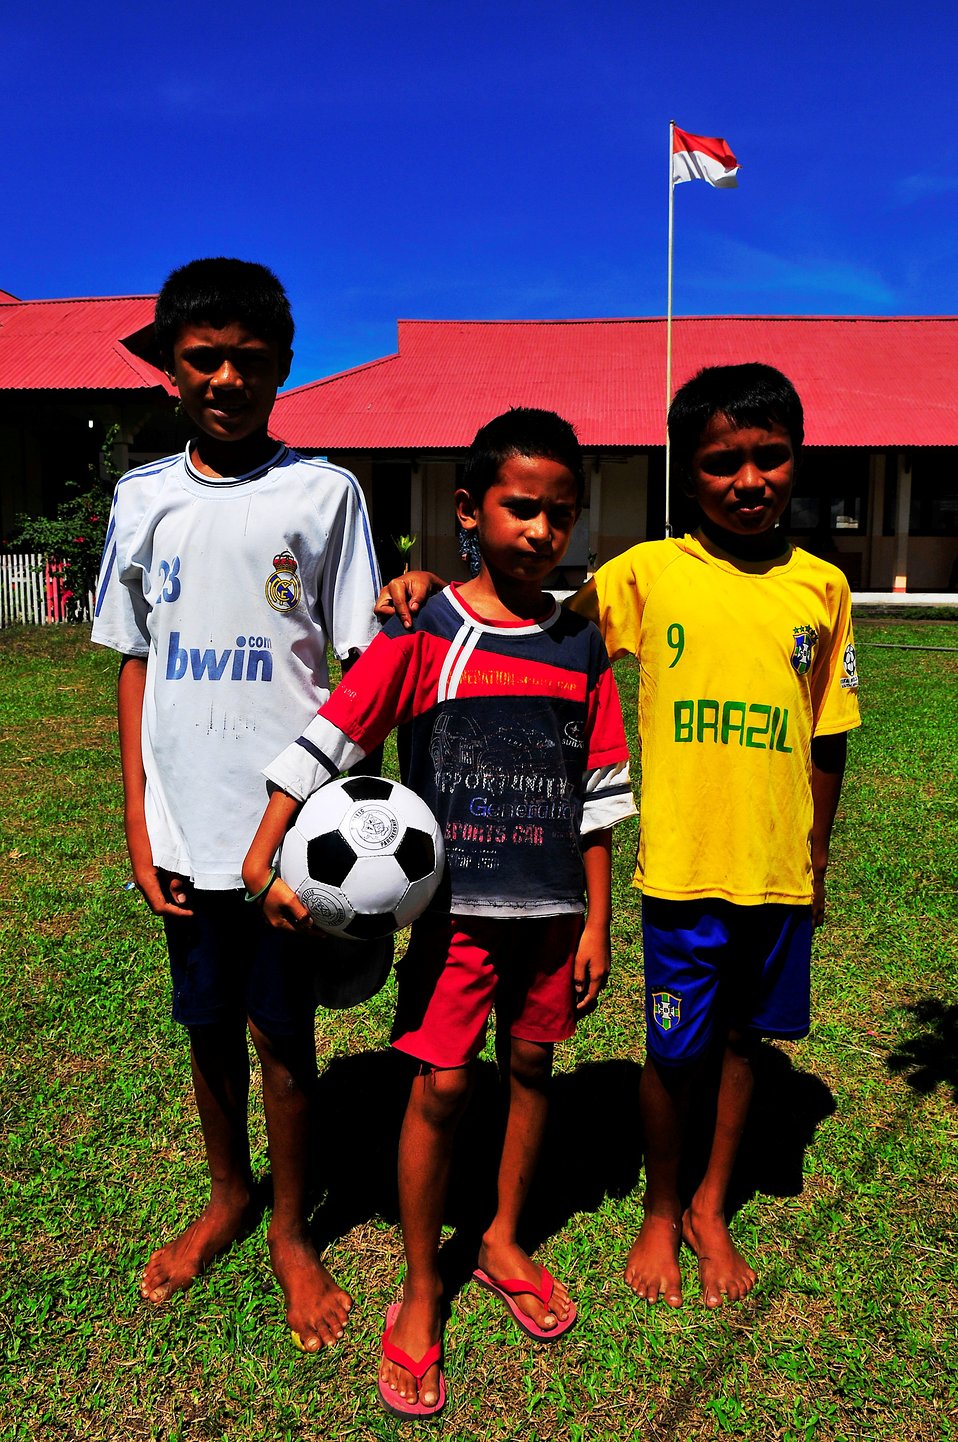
Local Indonesian children hold a new soccer ball which was donated during a medical civic action program, conducted at the Dokulamo school by the Military Sealift Command hospital ship USNS Mercy (T-AH 19) during its visit to Tobelo, Indonesia, on July 14, 2010. Mercy is deployed for Pacific Partnership 2010, the fifth in a series of annual U.S. Pacific Fleet endeavors conducted in Indonesia as a disaster relief exercise aimed at strengthening regional partnerships.